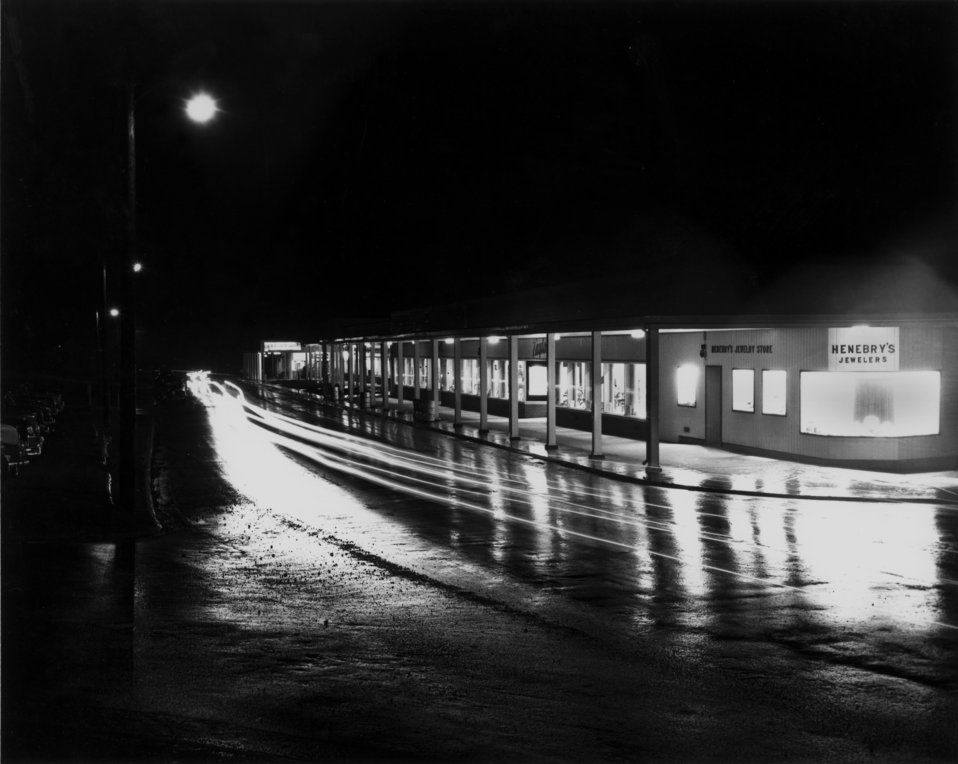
Night scenes of Town Site (Jackson Sq.) Broadway Avenue Oak Ridge

3258 DOE photo by Ed Westcott Night scenes of Town Site (Jackson Sq.) Broadway Avenue Oak Ridge Tennessee 12-28-1946